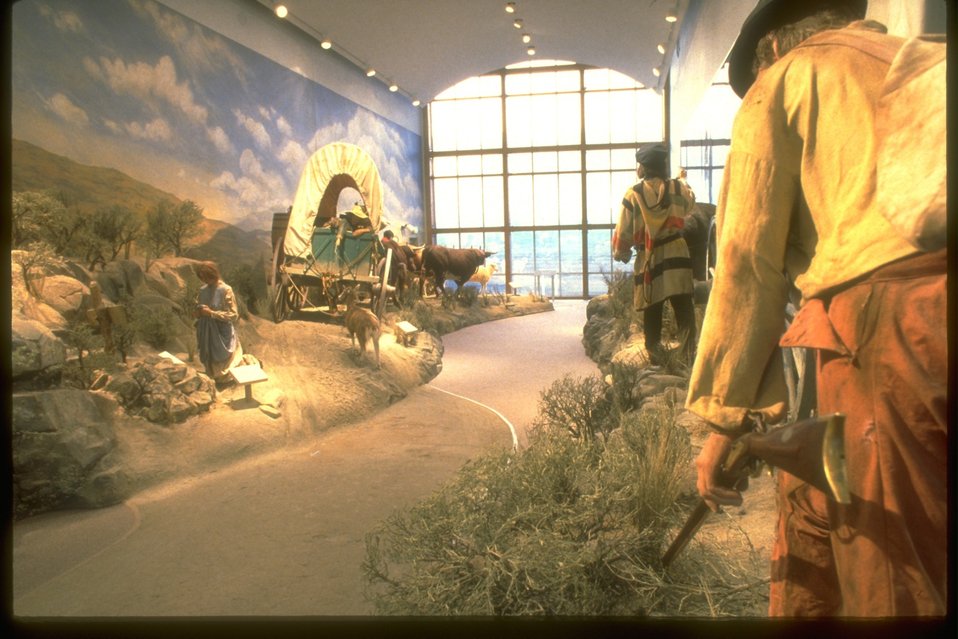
NHOTIC gallery with replicas of the Oregon Trail and early Oregon settlers.